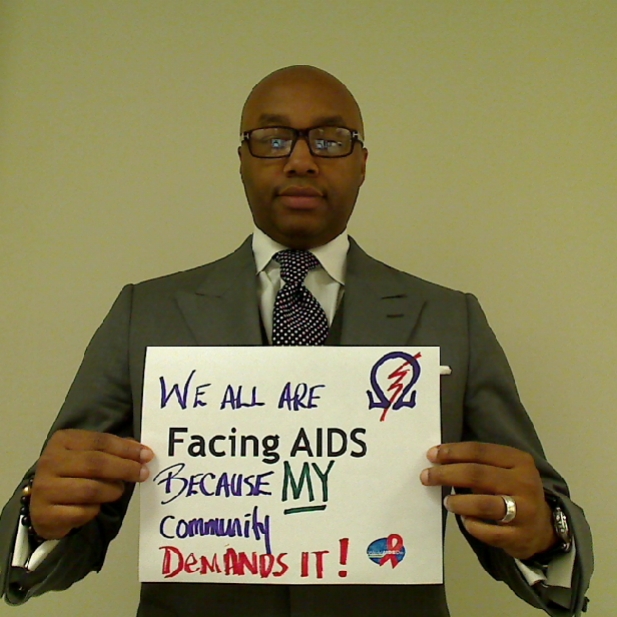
WE ALL ARE FACING AIDS BECAUSE MY community DEMANDS IT!